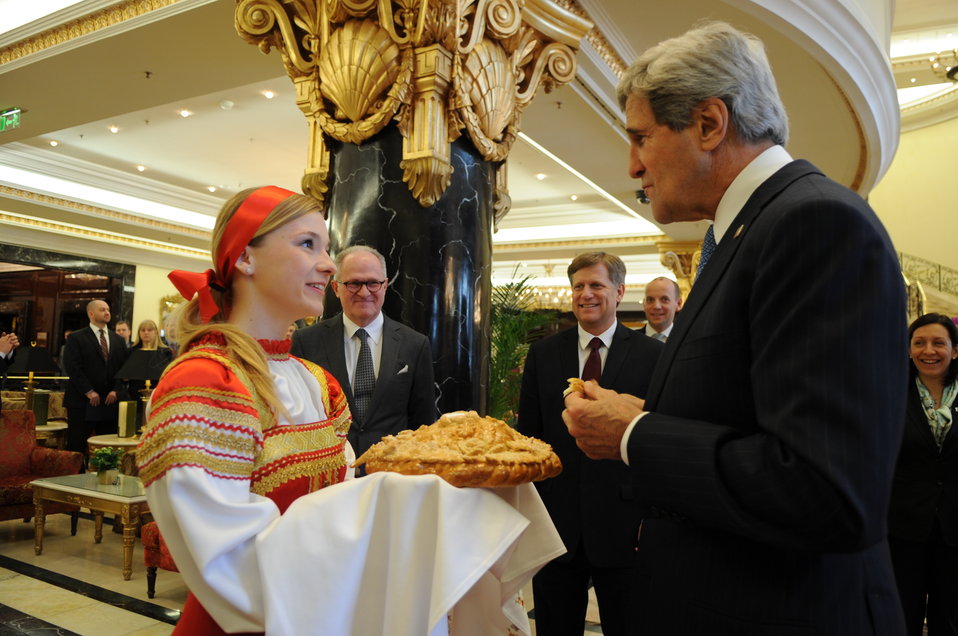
Secretary Kerry Enjoys Traditional Russian Bread and Salt

U.S. Secretary of State John Kerry enjoys traditional bread and salt presented to him by a Russian woman in traditional dress upon his arrival in Moscow, Russia, on May 7, 2013.